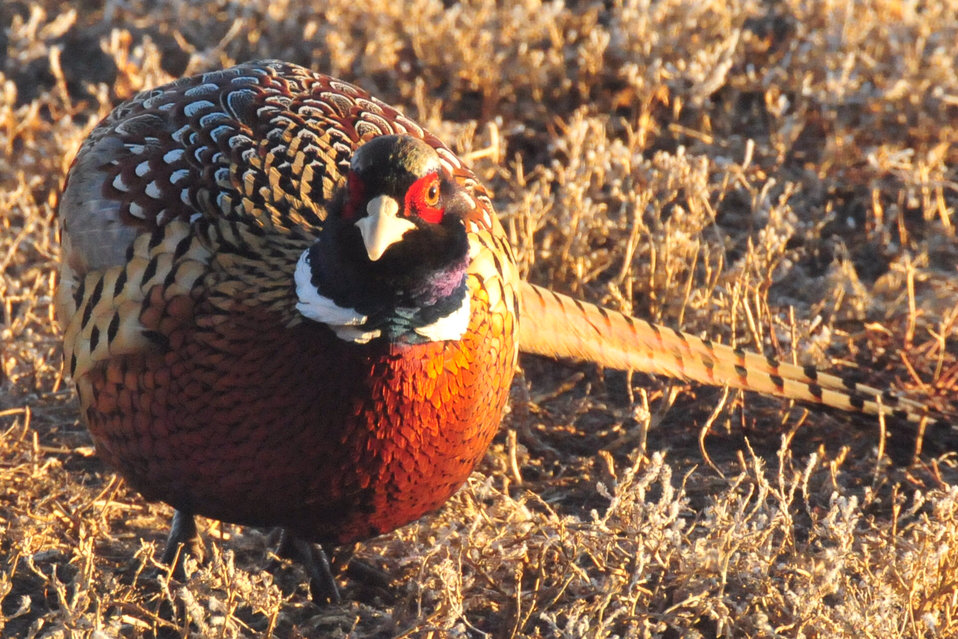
Ring-necked Pheasant on Lacreek National Wildlife Refuge 3